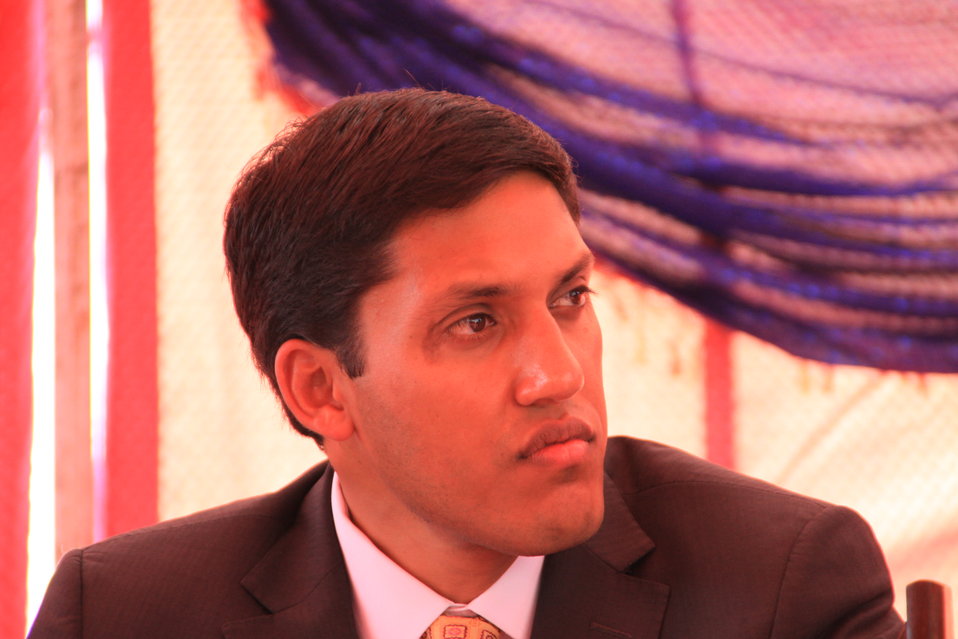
Baddam Bagh Farm